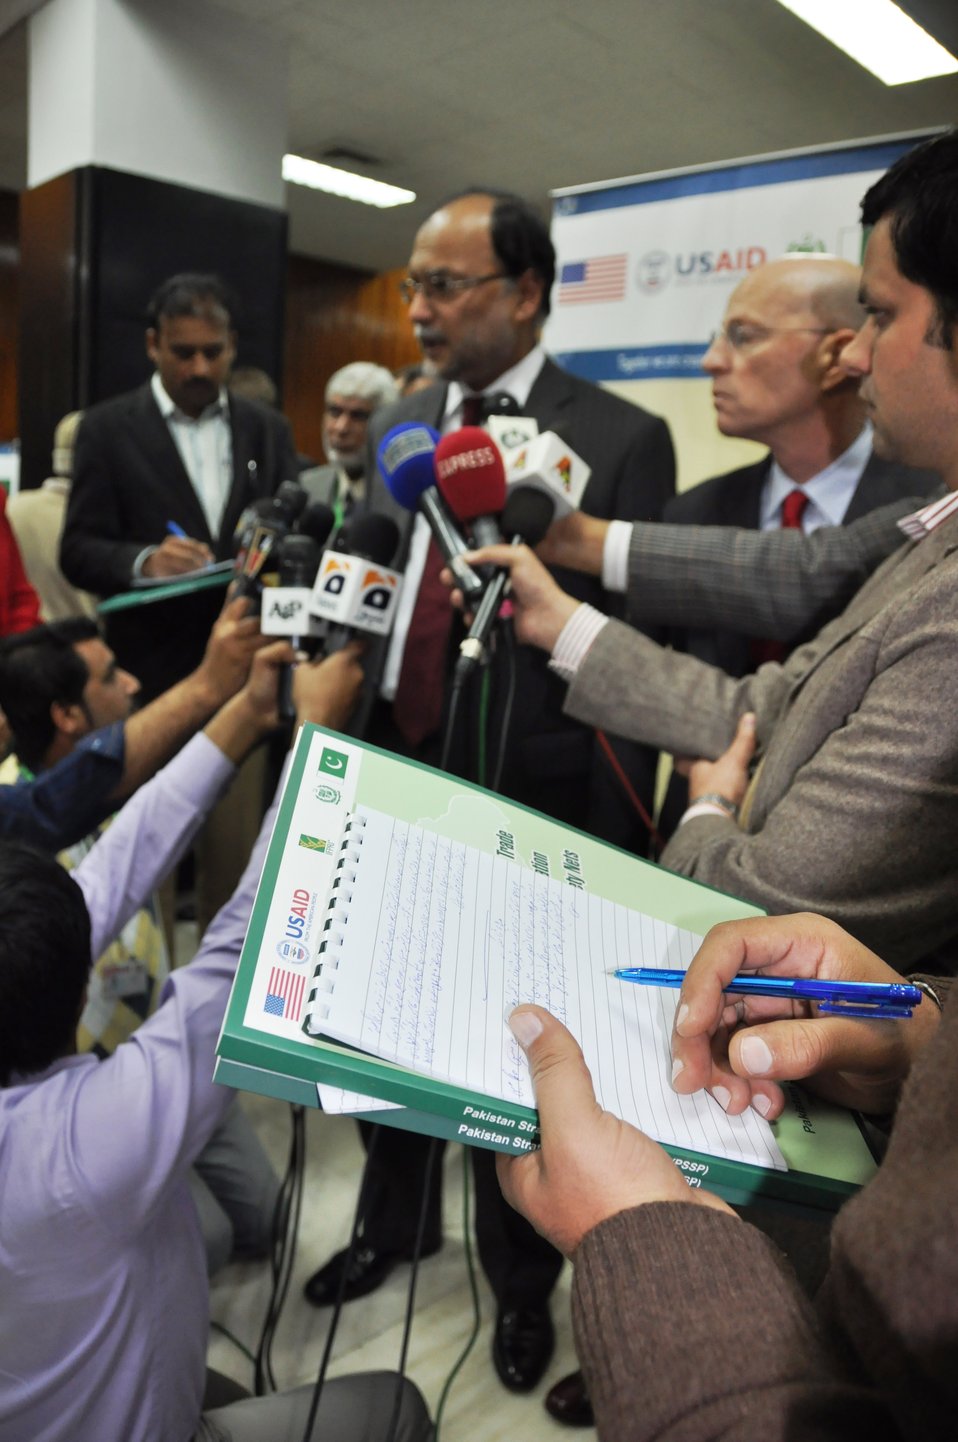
Jan 21, 2014- PSSP Event in Islamabad